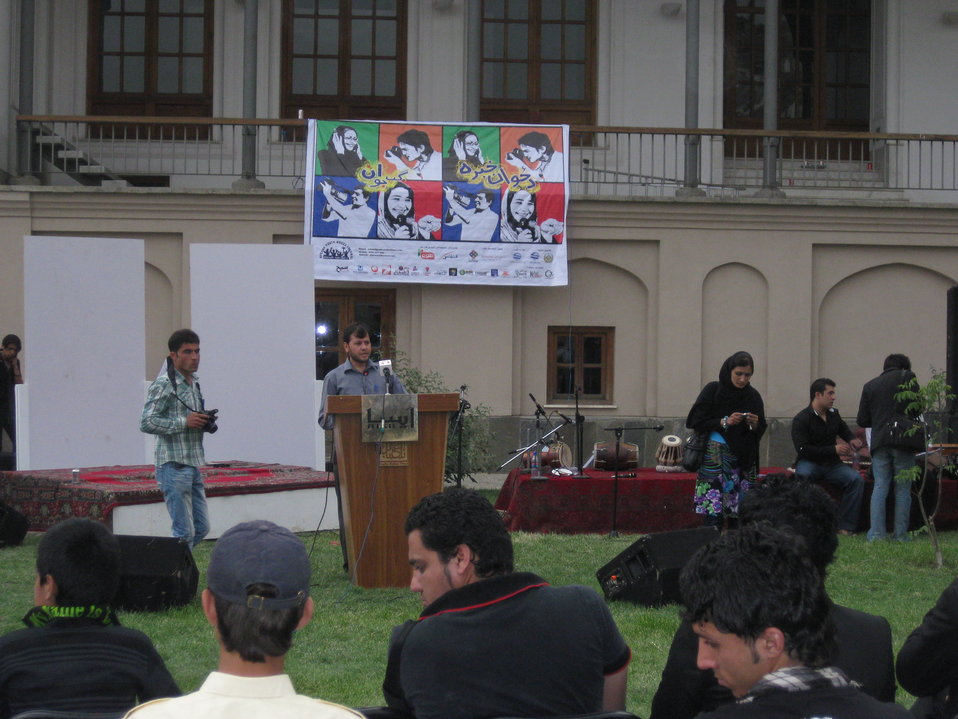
Afghan Youth Voices 112